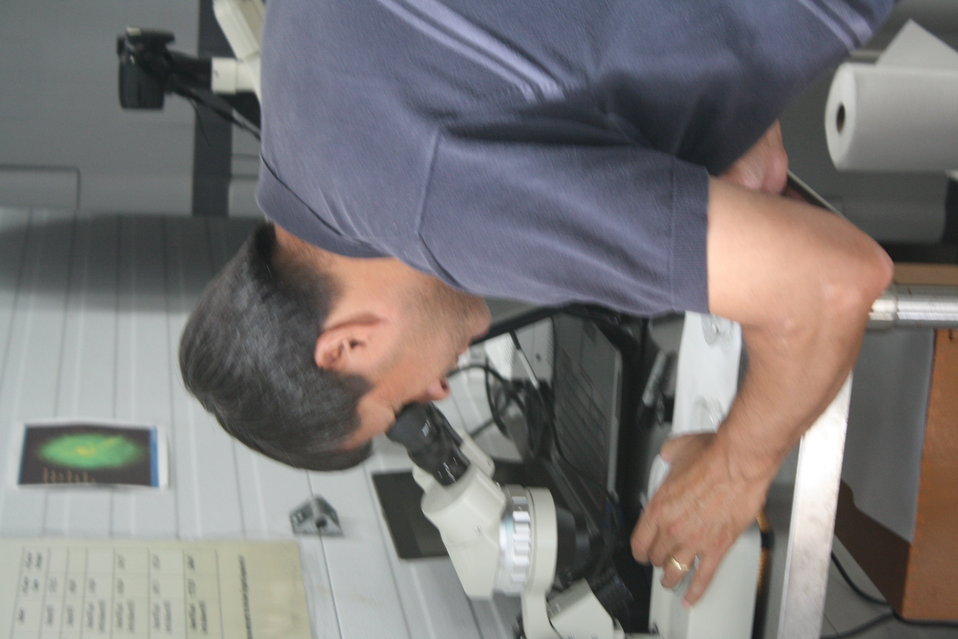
Nashua National Fish Hatchery welcomes regional office employees

Viewing shad eggs under a microscope.